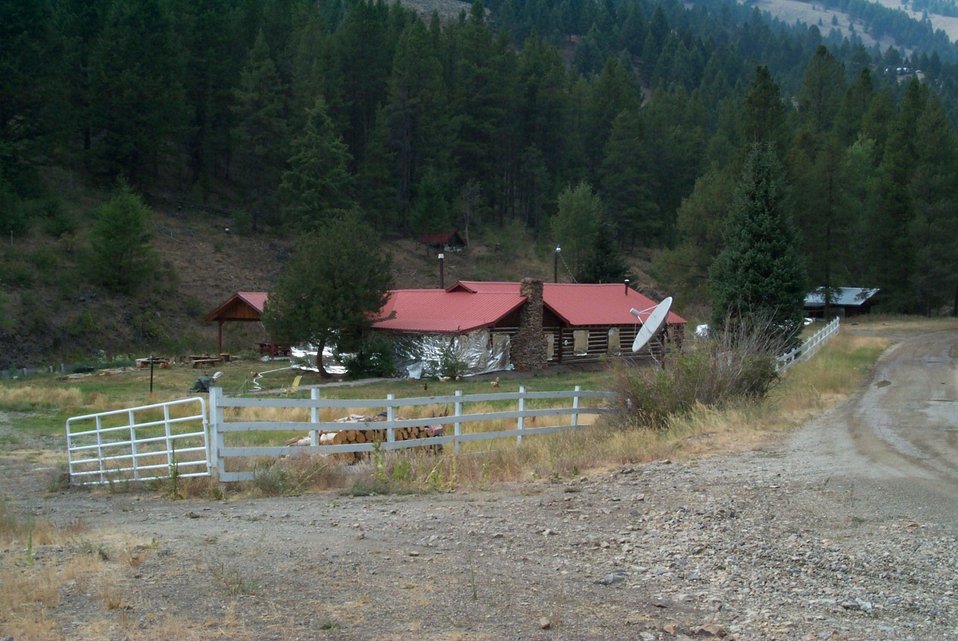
Fire retardant measures Urban interface Fire Clearwater Fire Salmon Field Office USRD Upper Snake River District